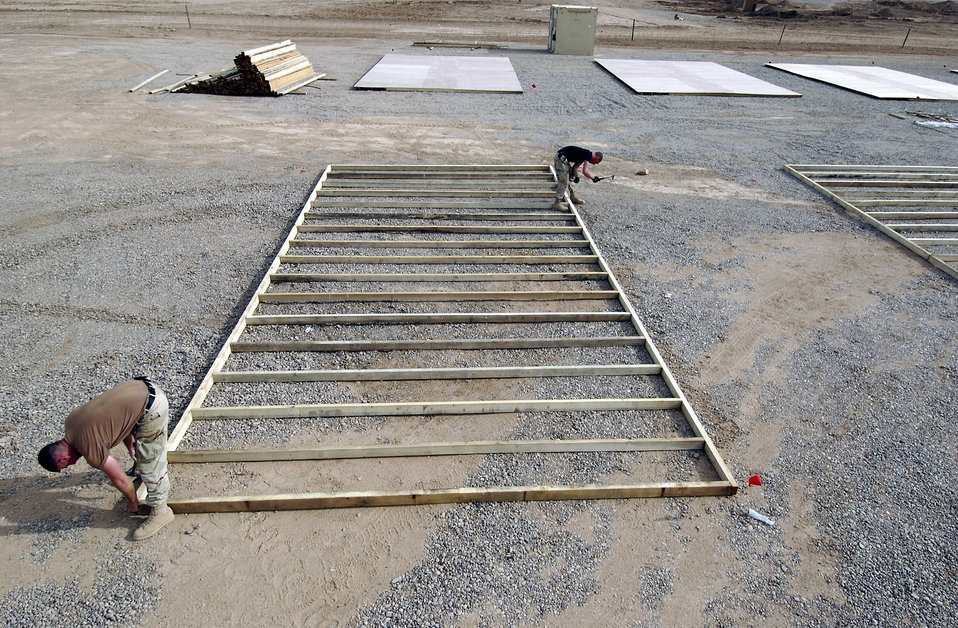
Iraqi Freedom

BALAD AIR BASE, Iraq -- Staff Sgt. Gerald Hoebelheinrich, left, and Airman 1st Class Arik Craig build the floor structure of a tent here March 4. Sergeant Hoebelheirich and Airman Craig are both civil engineers with the 332nd Civil Engineer Squadron. The tents are being built to accommodate the continuous flow of airmen reporting for temporary duty here.